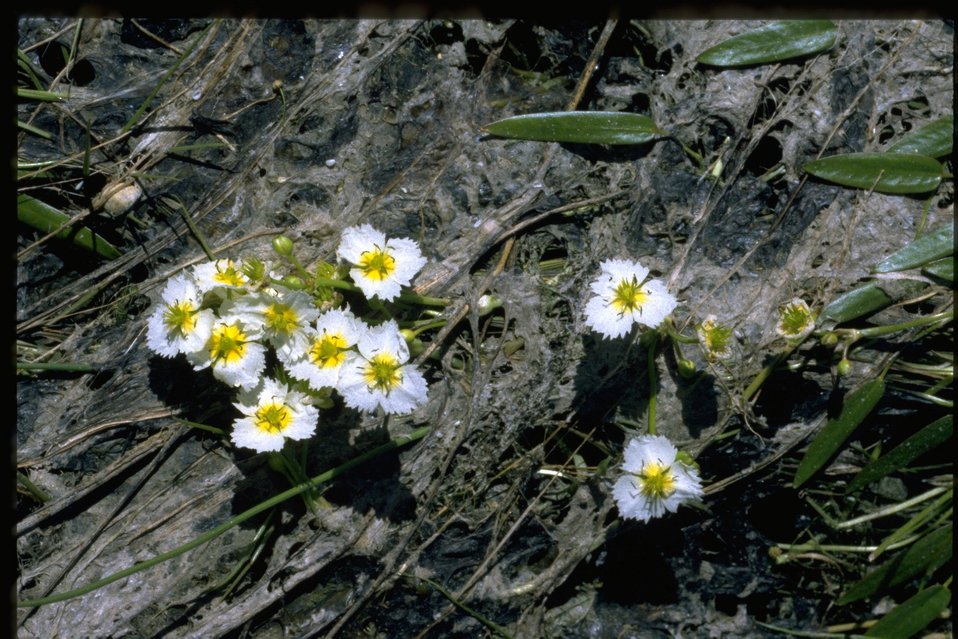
Far shot of Fringed Water Plantain habitat.